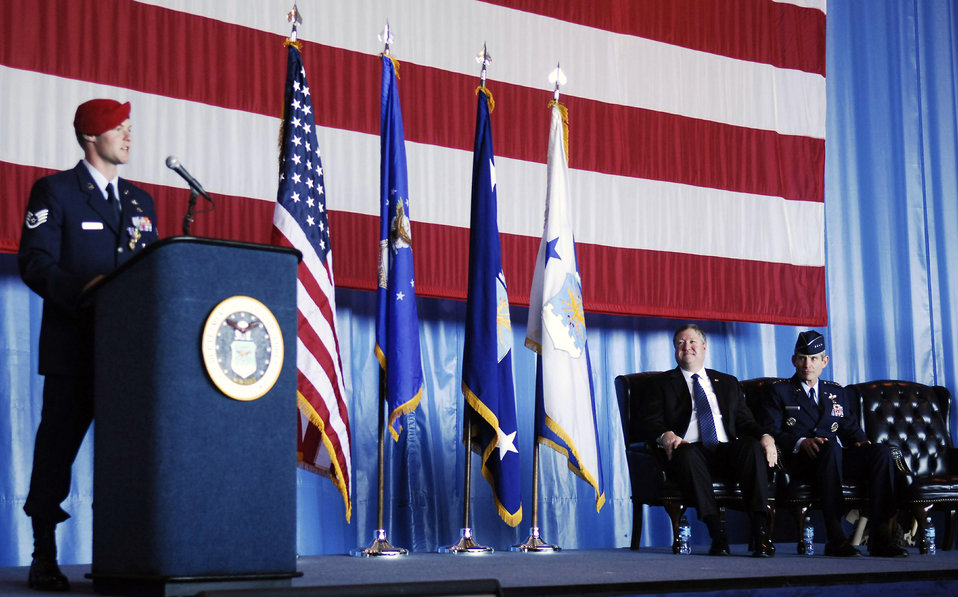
Combat controller receives Air Force Cross, Purple Heart

Staff Sgt. Zachary Rhyner addresses the crowd after receiving the Air Force Cross and a Purple Heart as Secretary of the Air Force Michael B. Donley and Air Force Chief of Staff Gen. Norton Schwartz watch March 10 at Pope Air Force Base, N.C. Sergeant Rhyner of the 21st Special Tactics Squadron received the medals for uncommon valor during Operation Enduring Freedom for his actions during an intense 6.5-hour battle in Shok Valley, Afghanistan, April 6, 2008.